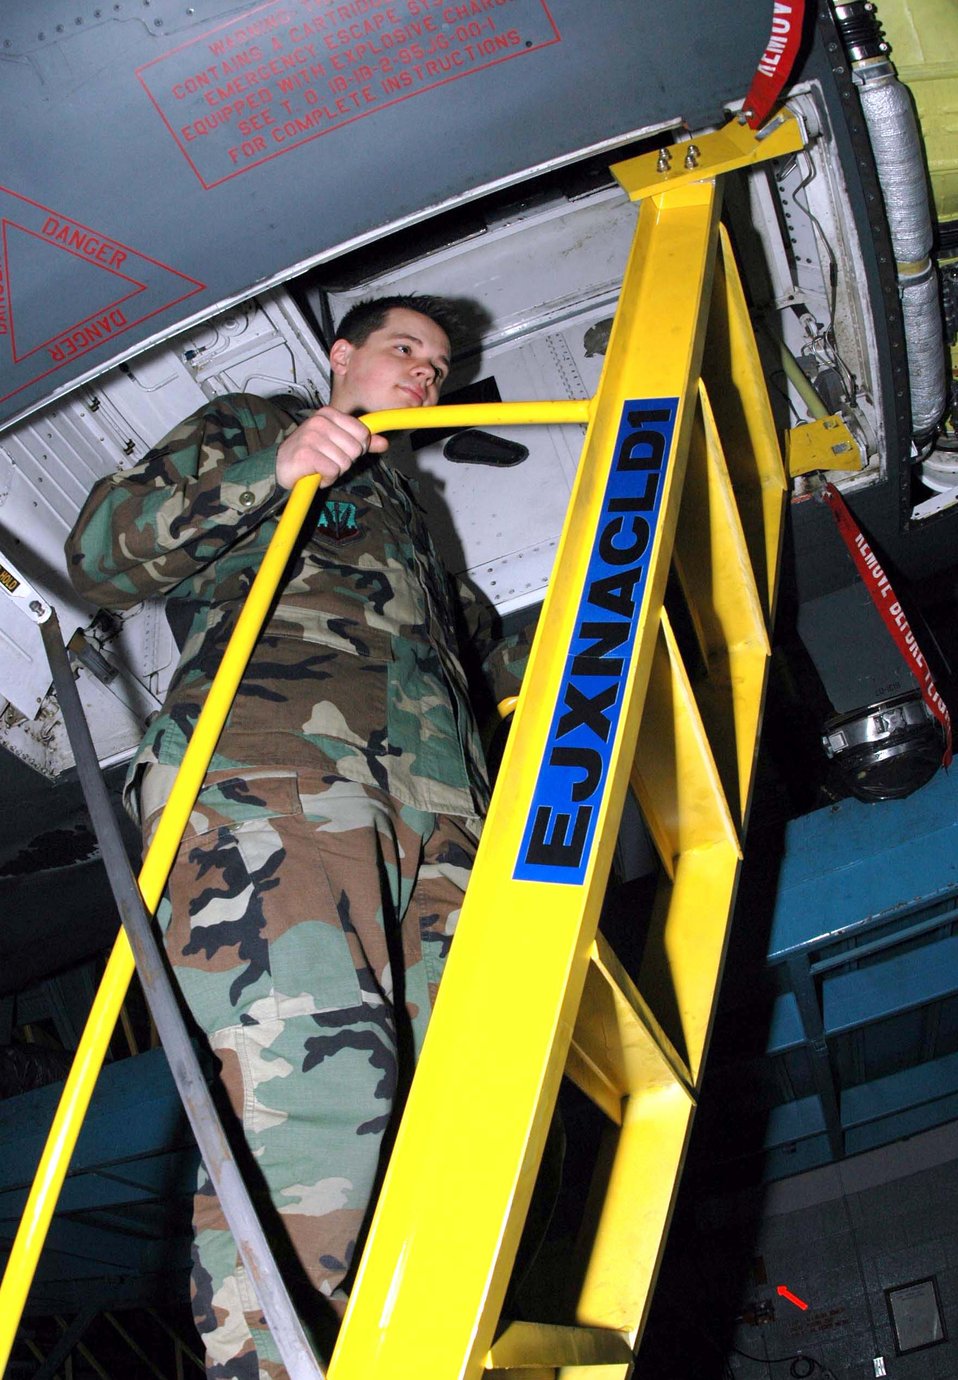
Ellsworth Airmen reinvent the ladder

ELLSWORTH AIR FORCE BASE, S.D. -- Airman 1st Class David Browning climbs the temporary ladder used to inspect the cockpit of the B-1B Lancer. The ladder was designed by Airmen here to make the aircraft more reliable. Airman Browning is a 28th Maintenance Squadron B-1B phase inspector.